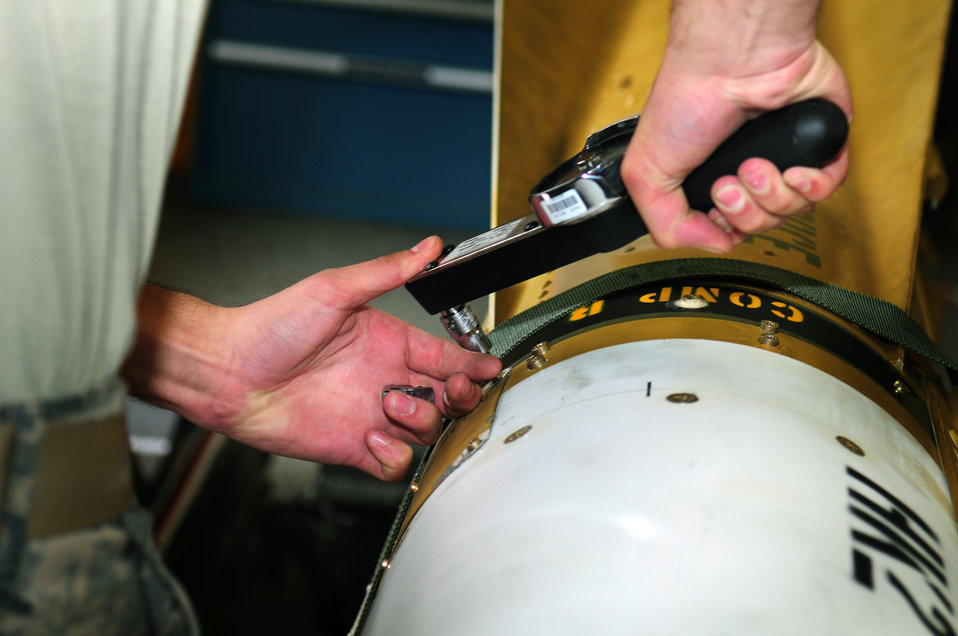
Missile retrofit provides better accuracy, saves Air Force money

A member from the 86th Munitions Squadron removes the guidance control section of an AGM-65 Maverick missile system for upgrades Aug. 11, 2009 at Ramstein Air Base at Germany. By July 2011, more than 2,000 AGM-65 Maverick H and K models will have been updated across the Air Force, saving the Air Force $42.8 million.